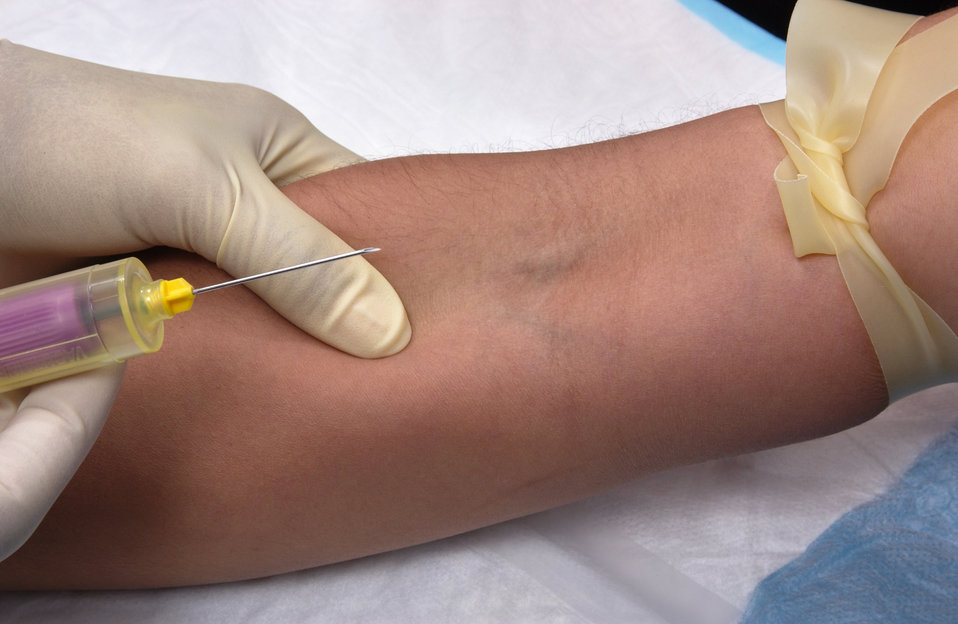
This image depicts a trained phlebotomist, i.e., a technician skilled in the practice of drawing blood from a patient, who is about to perform a percutaneous antecubital venipuncture into this patient's right antecubital vein. This image is the ninth in a series of 19 images outlining the steps involved in extracting blood during the venipuncture process.